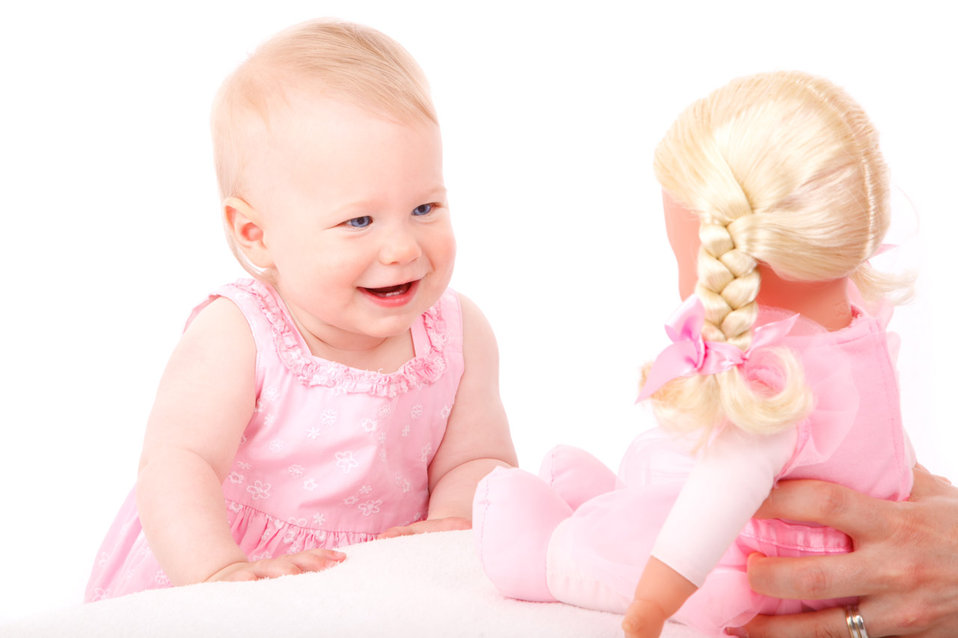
Baby girl and doll

Baby girl looking and smiling at a doll isolated on white background.